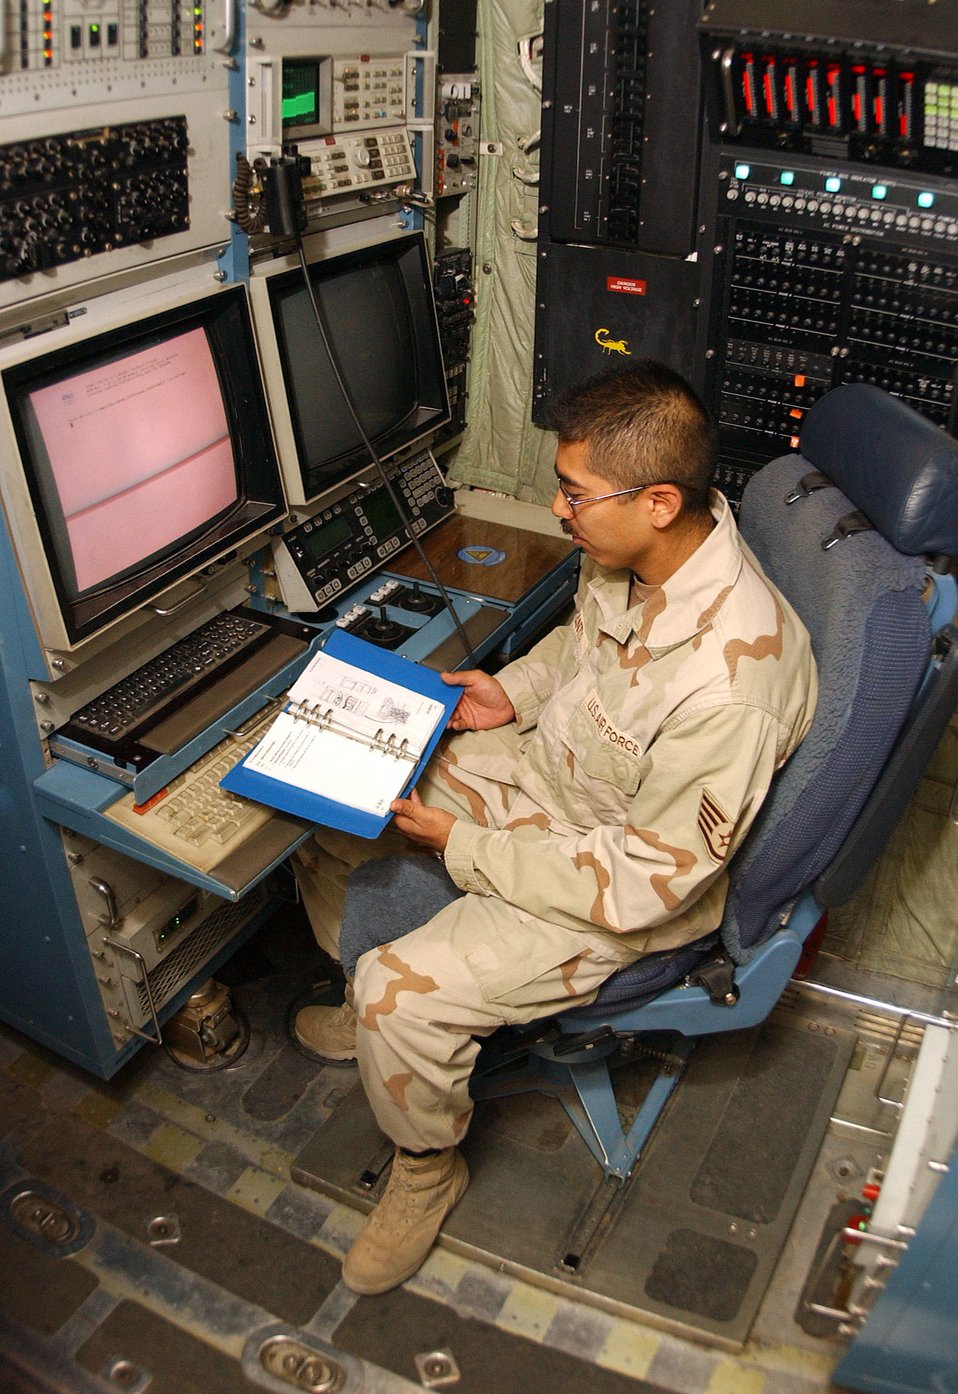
Silent protectors support Operation Enduring Freedom

BAGRAM AIR BASE, Afghanistan -- Staff Sgt. Robert Cantu studies a system operating job guide before performing tactical command, control and communications countermeasures in an EC-130H Compass Call. Sergeant Cantu is the production superintendent for the 41st Expeditionary Electronic Combat Squadron and is deployed from Davis-Monthan Air Force Base, Ariz.